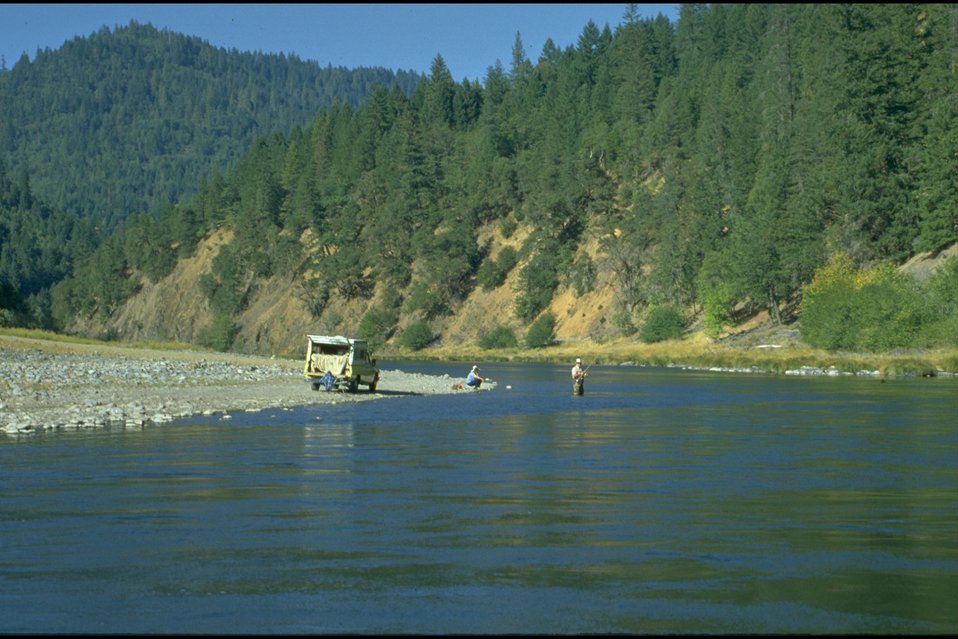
Rogue River - Rand Boat Landing, Hellgate Recreation Area.